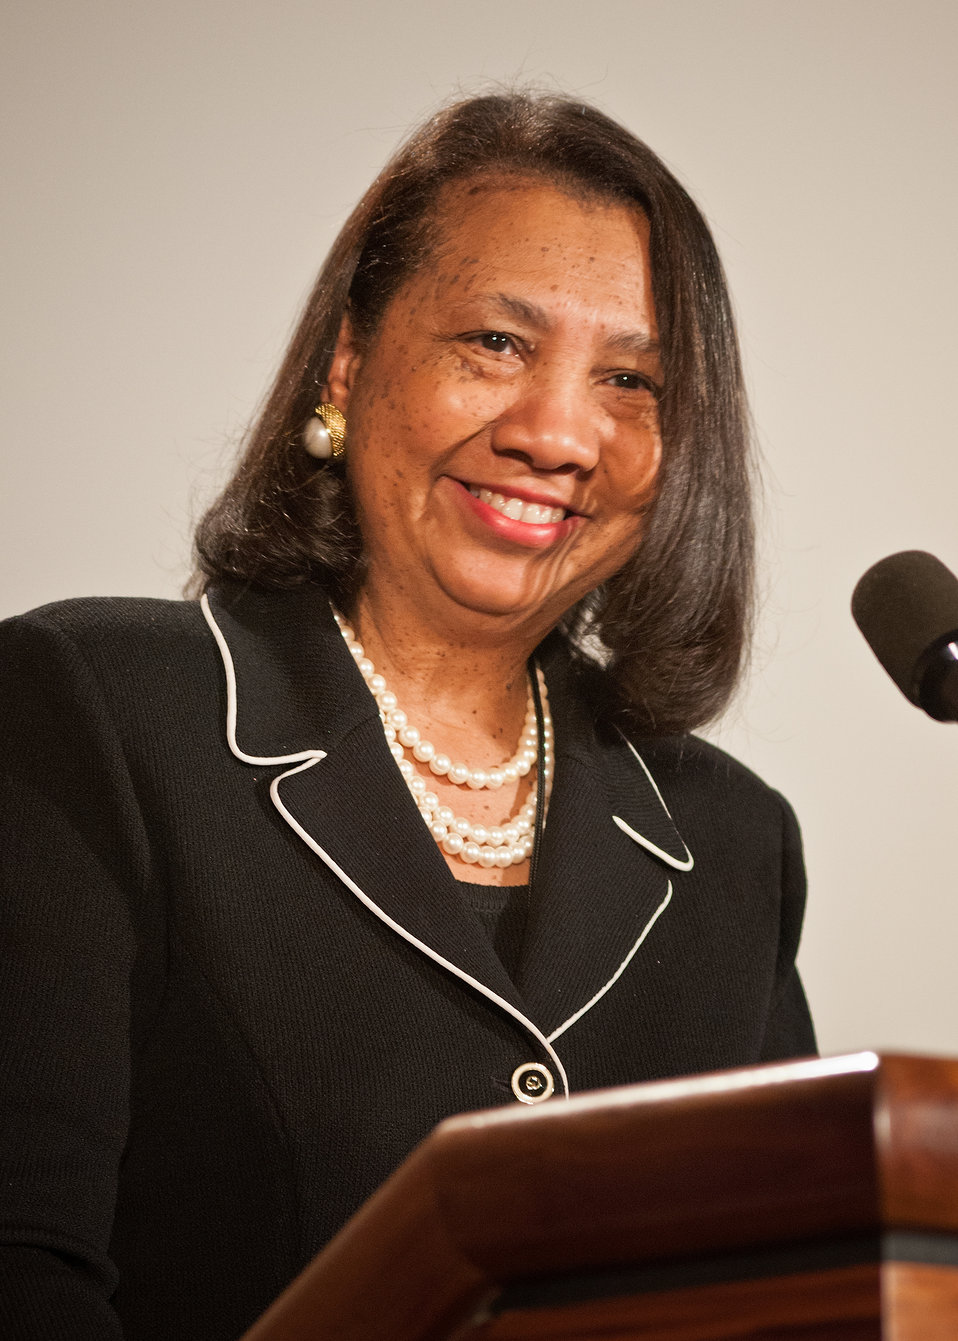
Dr. Alma Hobbs, Associate Assistant Secretary for Administration offers closing remarks at the close of the National Service Day and Martin Luther King Celebration in honor of Dr. Martin Luther King Jr.’s contributions to the Civil Rights Movement at the United States Department of Agriculture in Washington, D.C., on Thursday, January 12, 2012.